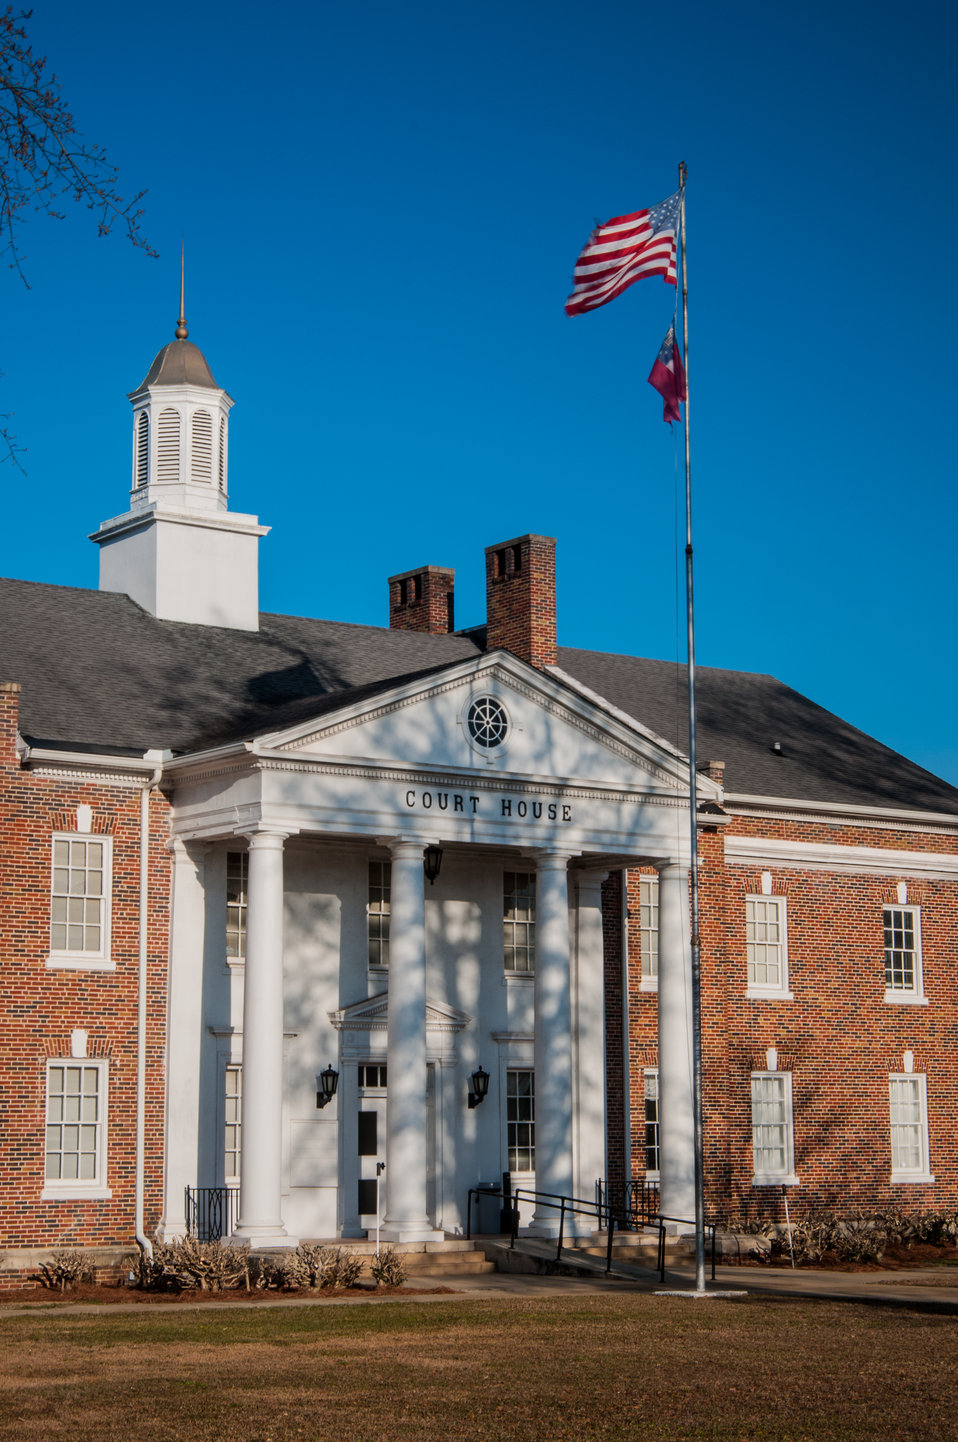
The Court House in Morgan, GA on Mar. 7, 2013. The U.S. Department of Agriculture (USDA) offers many economic grants, loans and conservation contracts through Rural Development (RD) and the Natural Resources of Conservation Service (NRCS) for areas of rural America with a high percentage of people living below the poverty level and considered economically distressed.